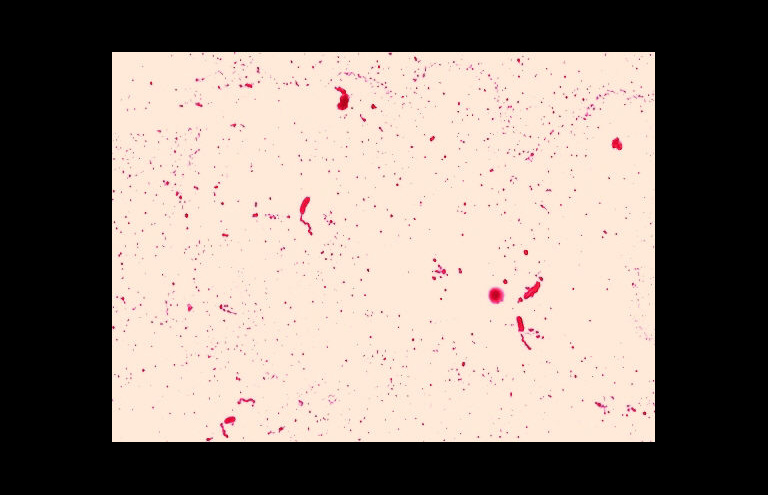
Pseudomonas diminuta. Leifson flagella stain (digitally colorized).